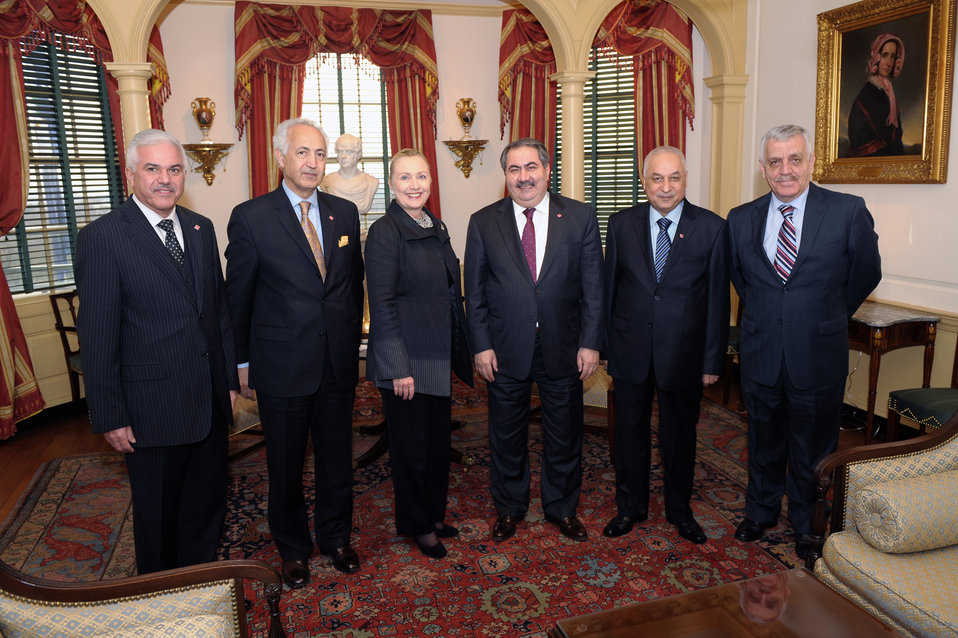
Secretary Clinton and Iraqi Foreign Minister Zebari Launch the Joint Coordination Committee

U.S. Secretary of State Hillary Rodham Clinton, center left, and Iraqi Foreign Minister Hoshyar Zebari, center right, pose for a photo of the U.S.-Iraq Joint Coordination Committee (JCC) delegations, at the U.S. Department of State in Washington, D.C., on December 12, 2011.